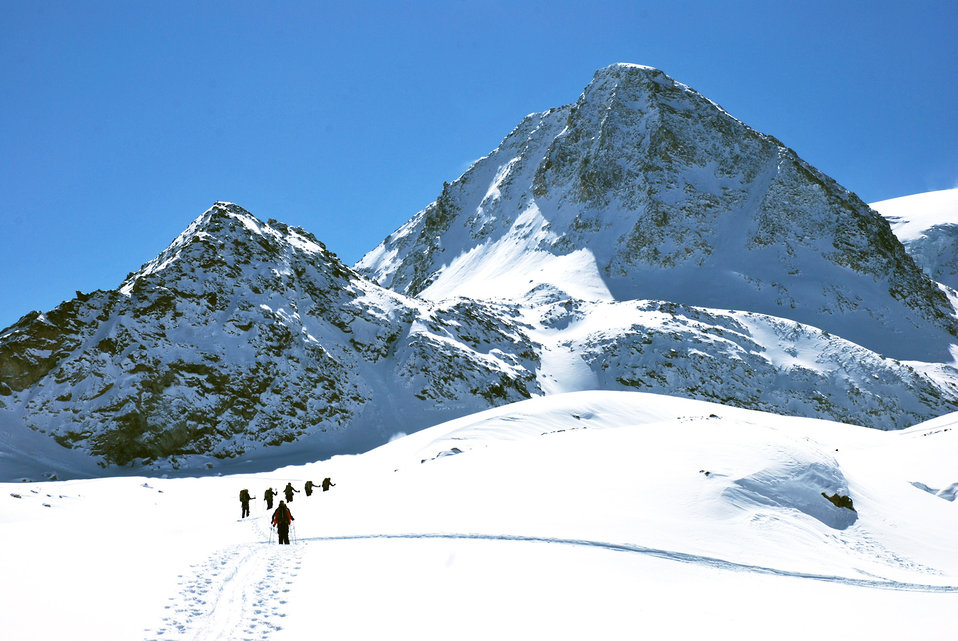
Alpine pararescuemen train for mountain rescues

Pararescuemen continue their journey along the Haute Route through the Alps April 5, 2010. The route, approximately 106 miles long, leads mountaineers from Chamonix, France, to Zermatt, Switzerland. The PJs were following the route while practicing their mountain rescue techniques, from March 27 through April 10, 2010. The pararescuemen are assigned to the 56th Rescue Squadron at RAF Lakenheath, England.